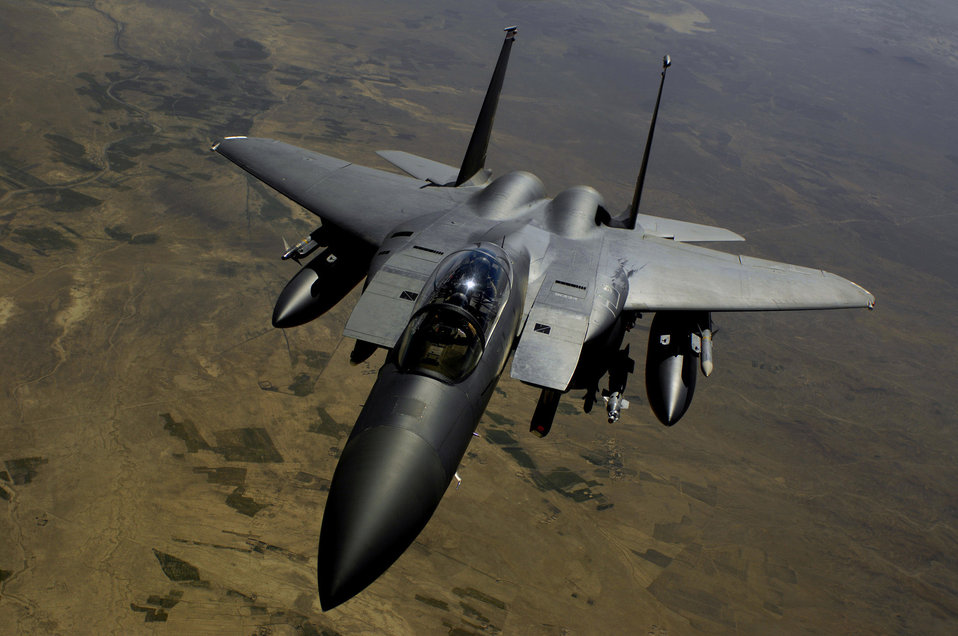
Nov. 6 airpower summary: F-15Es conduct shows of force

An Air Force F-15E Strike Eagle aircraft returns to the fight after receiving fuel from a KC-135R Stratotanker during a mission over Afghanistan. The F-15E Strike Eagle is a dual-role fighter designed to perform air-to-air and air-to-ground missions.